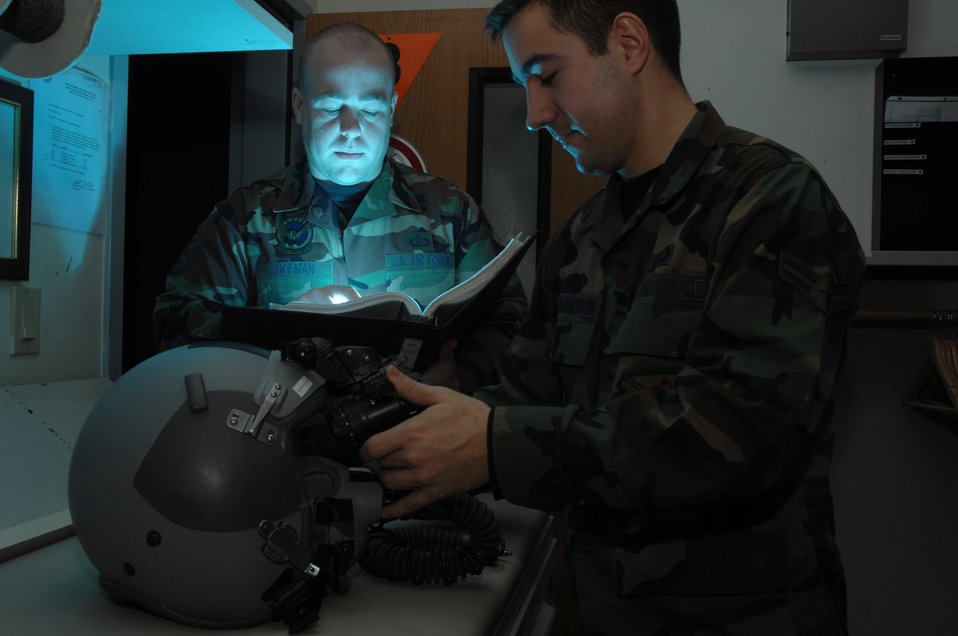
Seeing in the dark

Airman 1st Class Andrew Witherspoon (right) adjusts the eyespan on a pair of AS/AVS-9 Night Vision Goggles while Staff Sgt. Timothy Huffman consults the technical order in the life support section of the 355th Fighter Squadron Nov. 29 at Eielson Air Force Base, Alaska. During the winter months, pilots at Eielson AFB are given a greater opportunity to train with NVG's more than their counterparts in the lower 48 states due to the decreased length of sunlight.